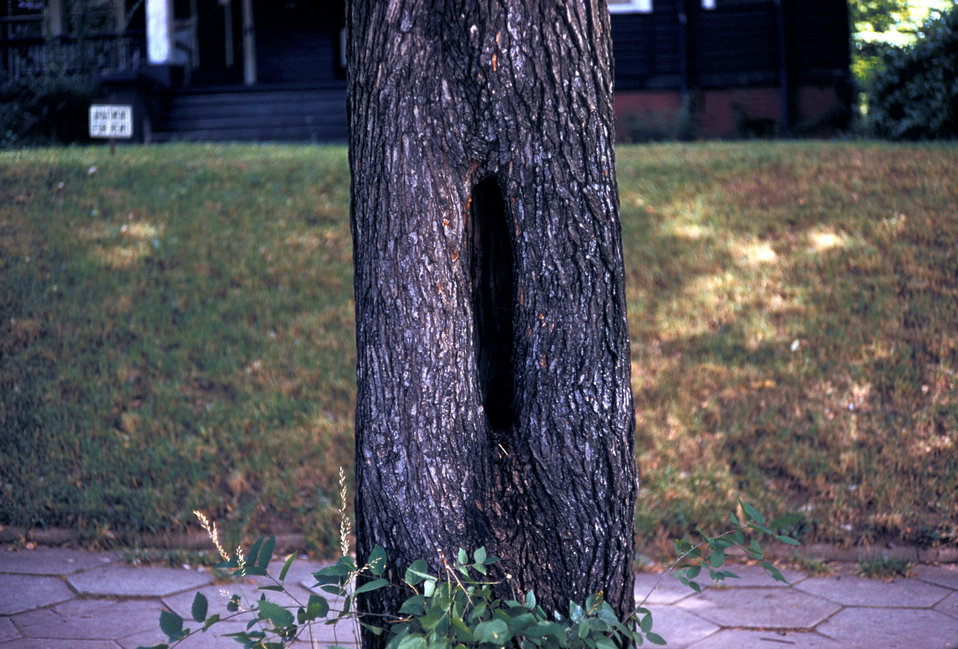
Northern Woodland mosquitoes are found in this tree hole containing rainwater.